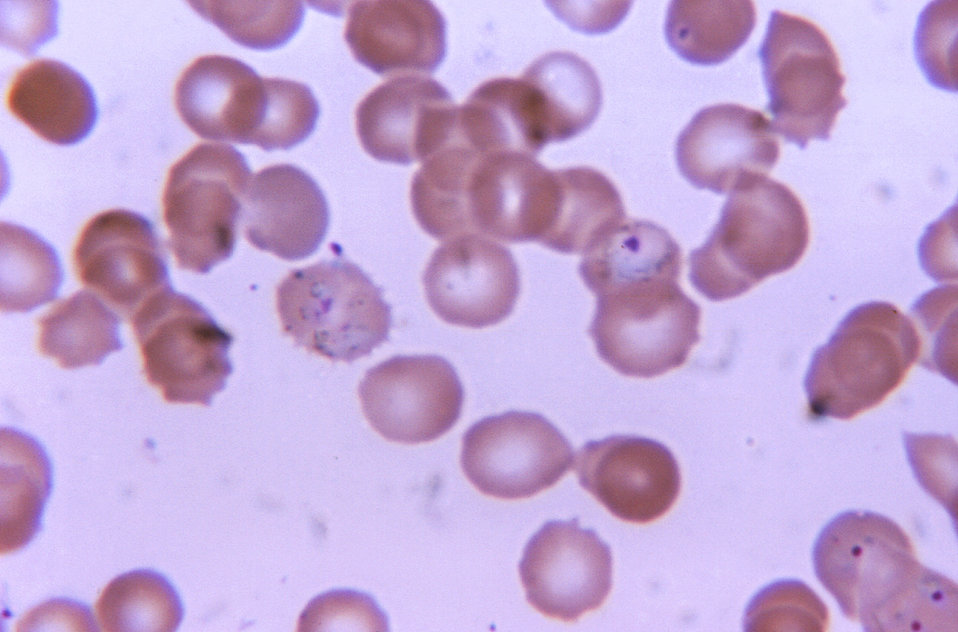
This poorly stained micrograph shows growing P. vivax trophozoites, but does not properly reveal Sch�'s dots.